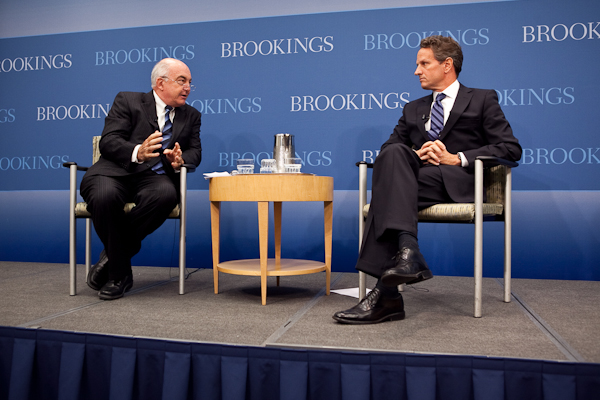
Brookings Institution, 10/06/2010

At the Brookings Institution, Secretary Geithner outlined U.S. objectives for this week’s Annual Meetings of the International Monetary Fund (IMF) and World Bank as well as the upcoming meeting of G-20 Finance Ministers in Korea. He discussed the global economy’s unprecedented cooperative efforts to restart economic growth and stabilize financial markets and addressed how to strengthen the pace of growth and repair in a way that provides for a more balanced and sustainable global economic recovery. Following his remarks, the Secretary participated in a question and answer session with the audience.